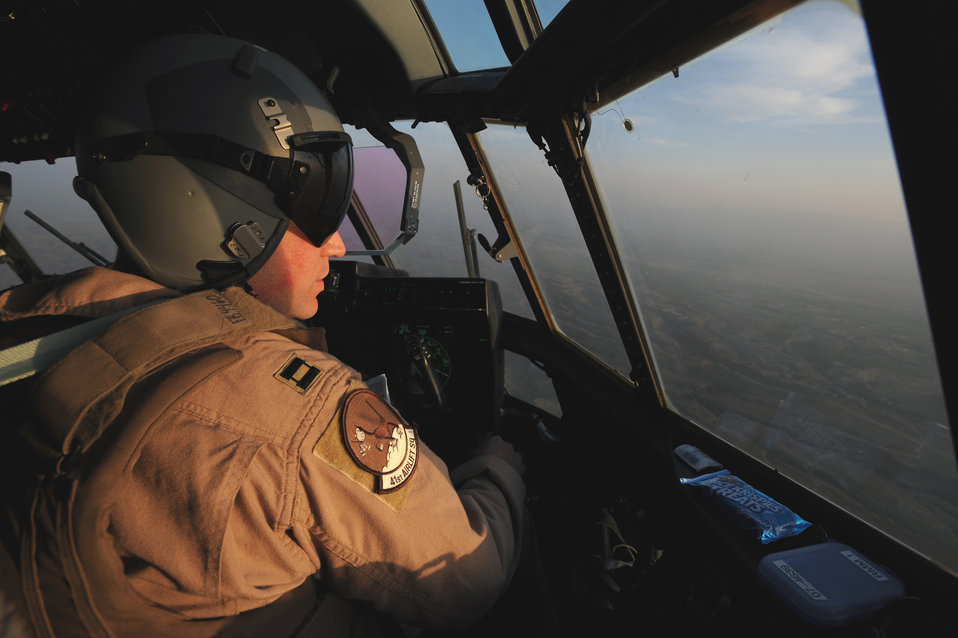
New Kandahar unit prepares for troop increase

Captain Don Rolleg flies a C-130 Hercules mission March 14 over Afghanistan. He is assigned to the newly activated 772nd Expeditionary Airlift Squadron at Kandahar Airfield, Afghanistan, activated to assist with the increase of U.S. troops to the region. Captain Rolleg is a C-130 pilot.